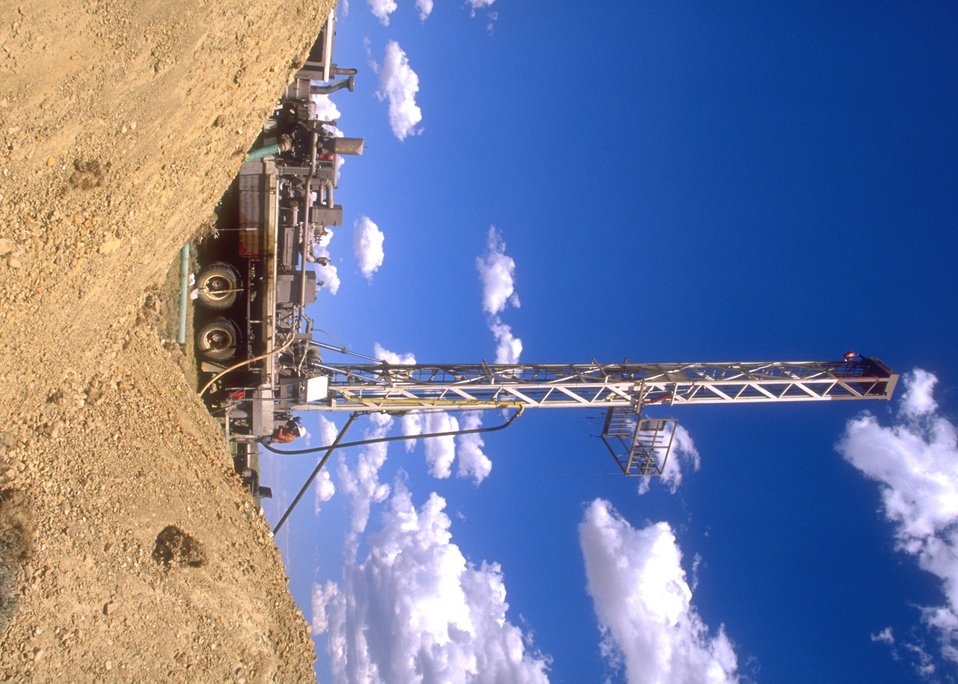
Drill site for coal bed methane, Buffalo Field Office.